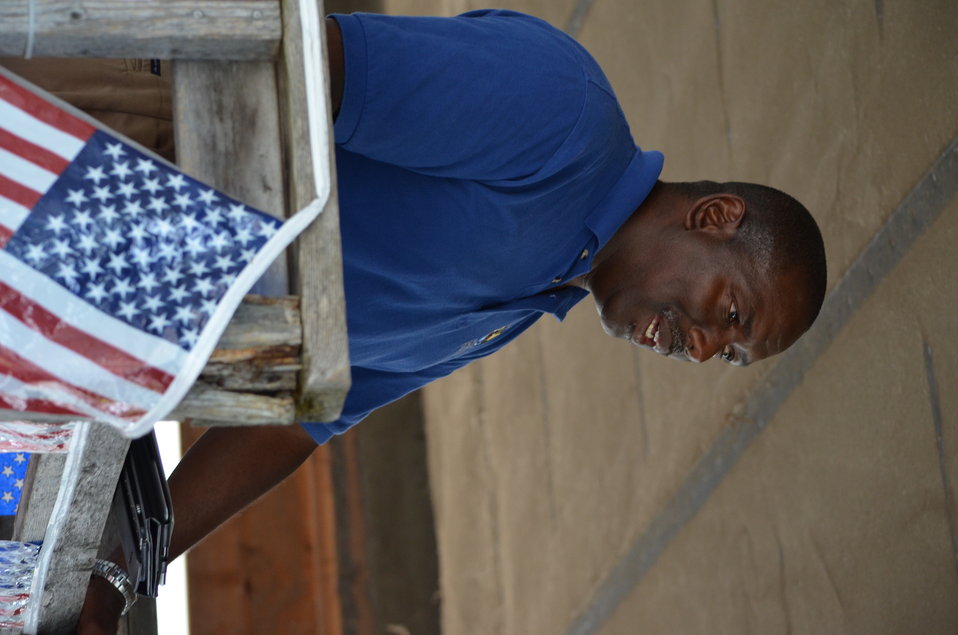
Assistant Director of Migratory Bird Program, Jerome Ford, talks about the Federal Duck Stamp Program at the South Saint Paul Rod and Gun Club.